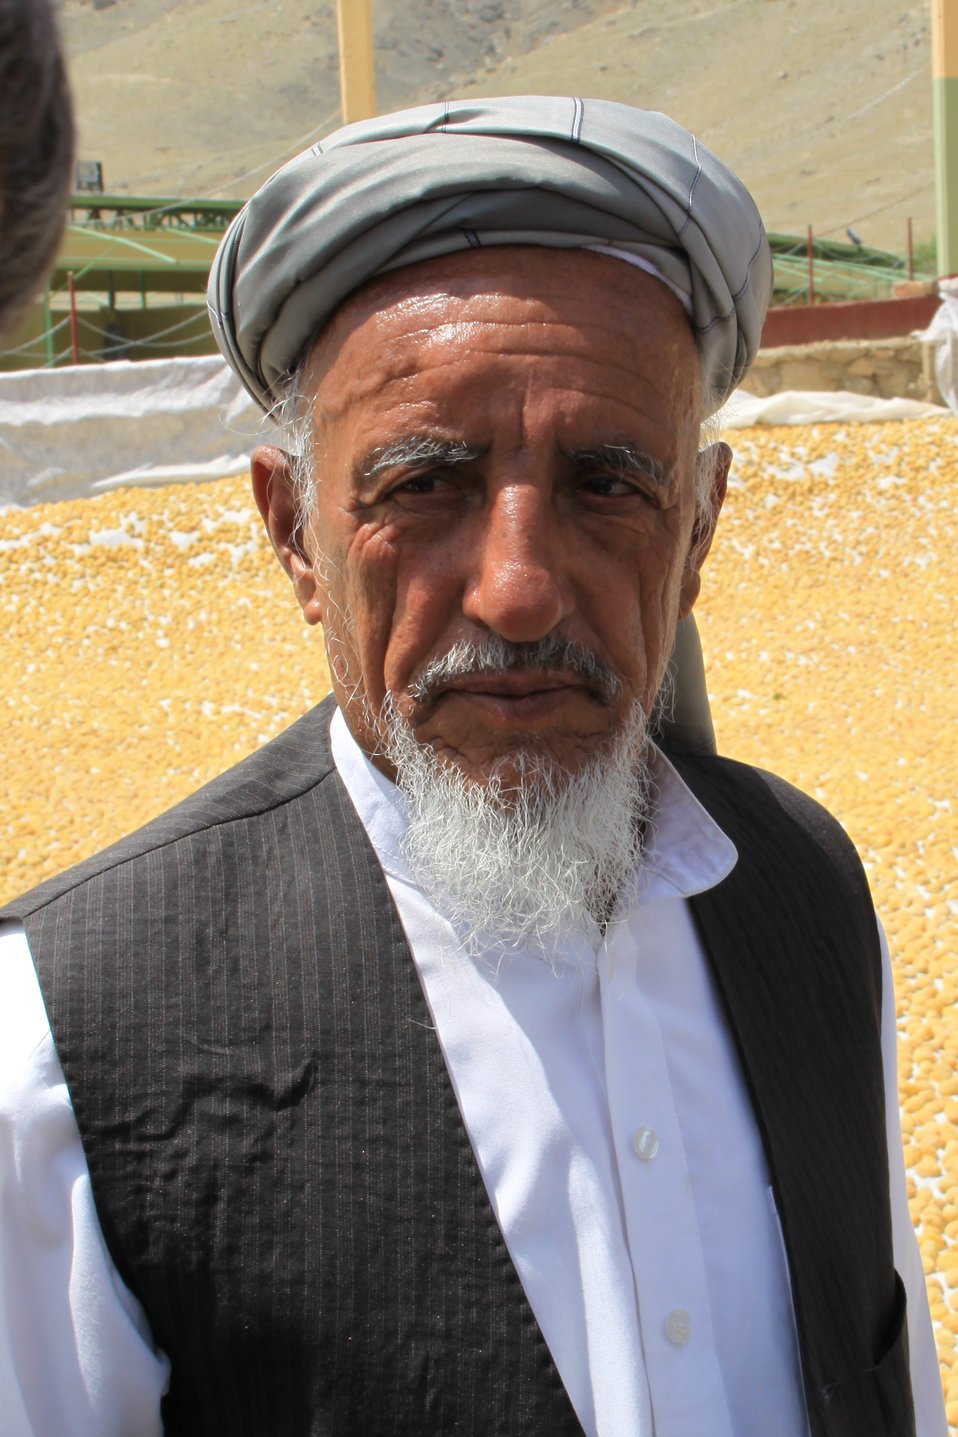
Badam Bagh Farm